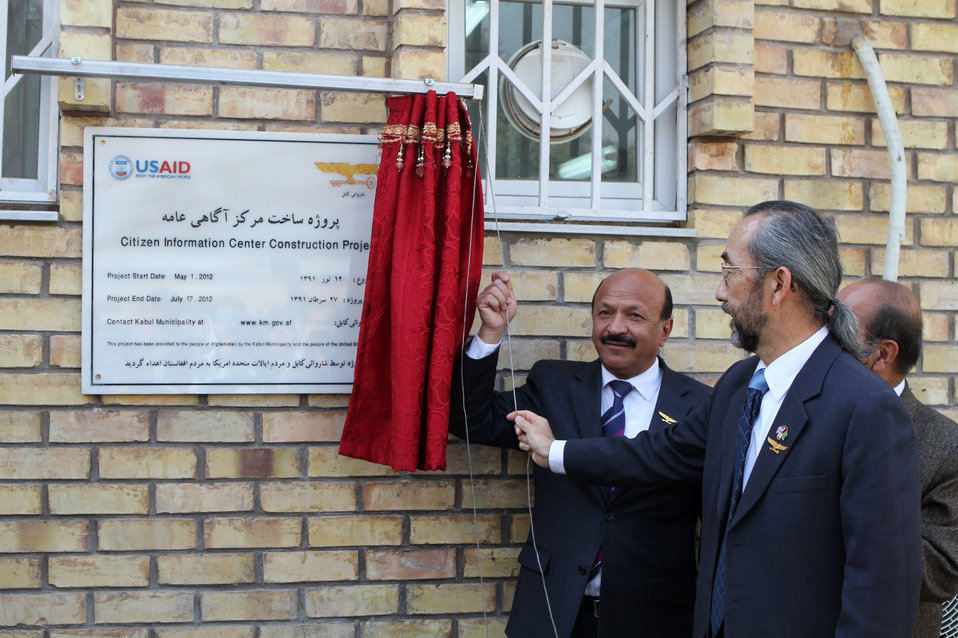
Inauguration of citizen information center